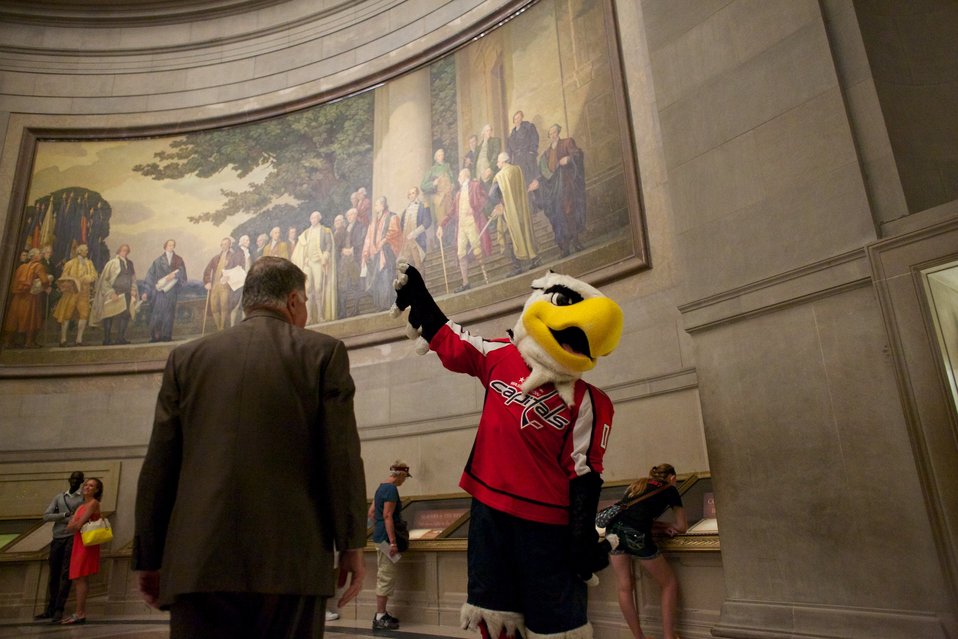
Washington Capitals mascot Slapshot visits the National Archives